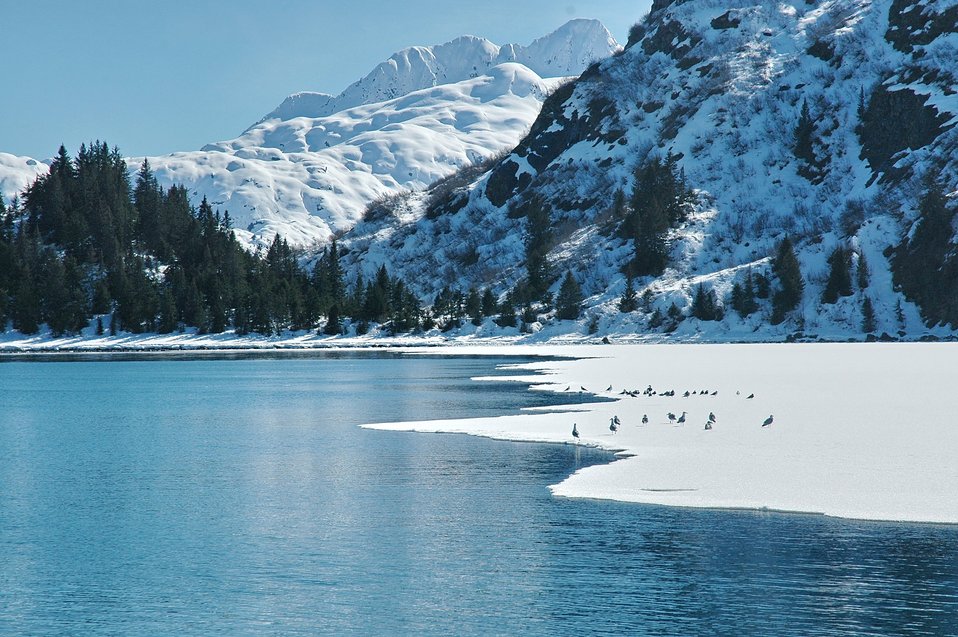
Sea gulls strolling on the ice at Icy Bay